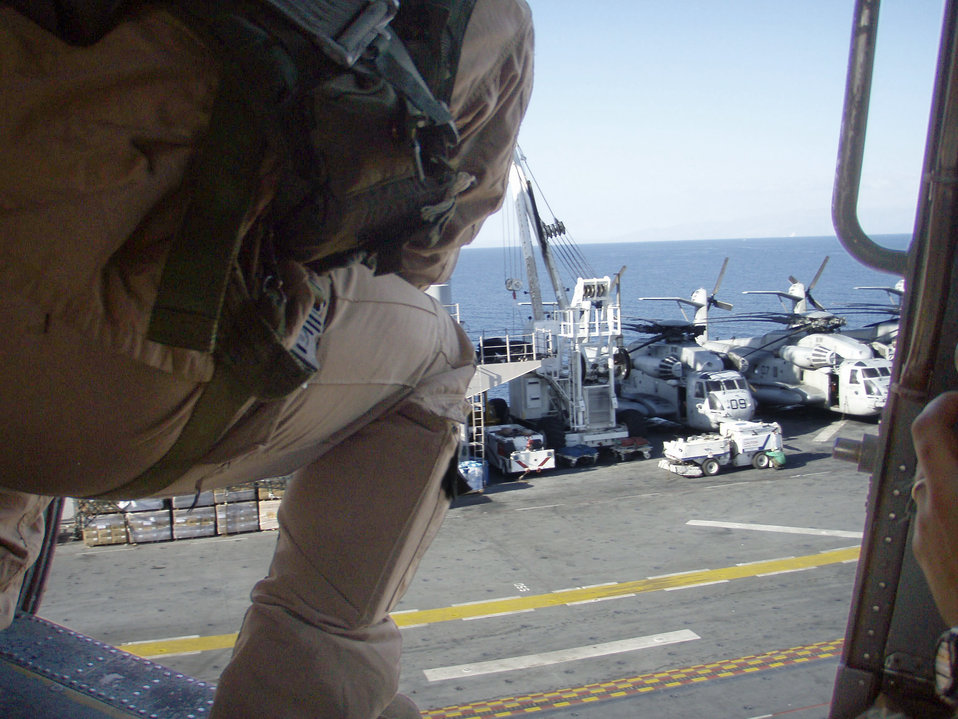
Photographed by U.S. Public Health Service (USPHS) Lt. Cmdr. Gary Brunette this image depicted an aerial view of the aircraft carrier, USS Bataan, during Caribbean Operation Unified Response. This image was captured By Cmdr. Brunette, as he and his fellow USPHS corpsmen were in the process of being transported to the carrier aboard a helicopter from the Nimitz class supercarrier, USS Carl Vinson (CVN-70), as the helicopter was making its final approach, landing its passengers upon the carrier's deck.